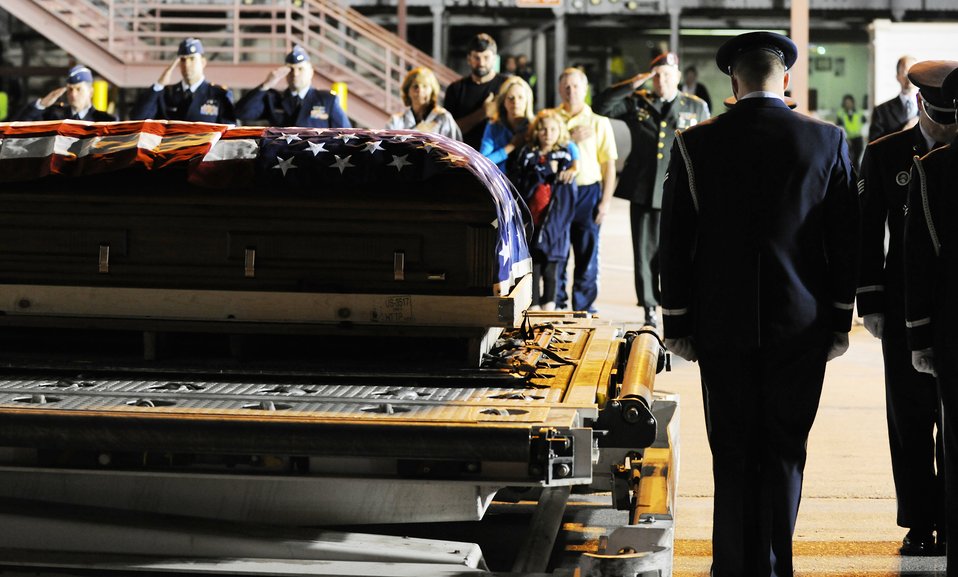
Air Force pilot missing in action from Vietnam War is identified

Brig. Gen. Russell Handy (from left), 57th Wing commander; Maj. Richard Goodman, U.S. Air Force Air Demonstration Squadron; and Chaplain (Capt.) David Horton, 99th Air Base Wing; all from Nellis Air Force Base, Nev., along with members of the Goodman family salute Jan. 12, 2010, as a Nellis AFB honor guard prepares to transfer the remains of Maj. Russell C. Goodman from an aircraft to a hearse at McCarran International Airport in Las Vegas. Major Goodman was killed in action in Vietnam on Feb. 20, 1967, when his F-4 Phantom was shot down.